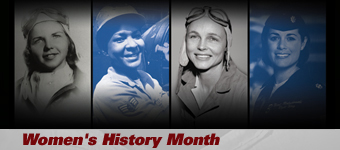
Women's History Month

Women Airforce Service Pilot Marty Wyall, Sgt. Vanessa Sheffield, Women's Auxiliary Ferry Squadron Pilot Betty Gillies and Air Force Thunderbird Pilot Maj. Nicole Malachowski show the accomplishments of women serving in the Air Force.